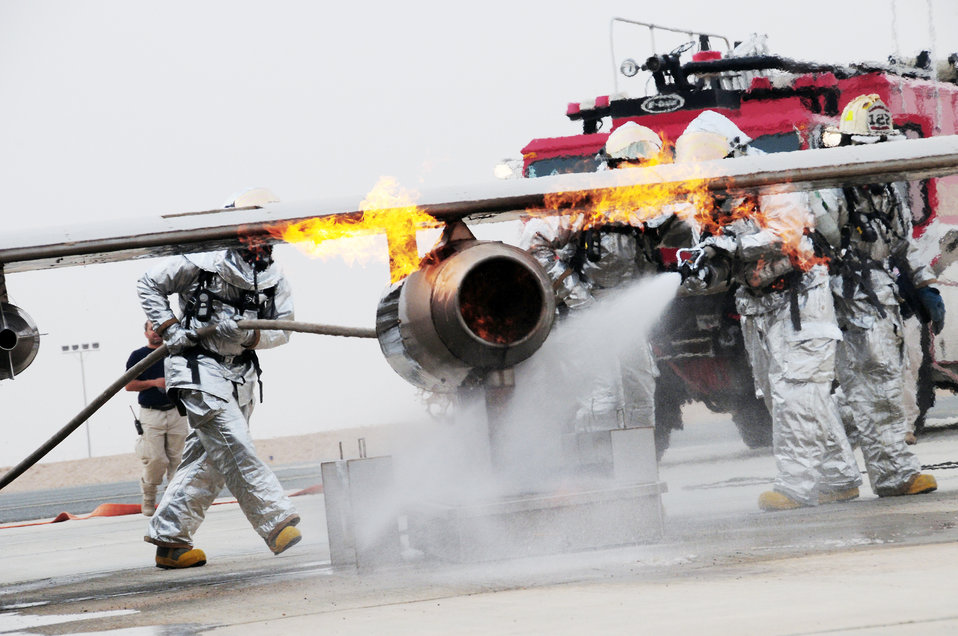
Firefighters test their skills

Firefighters practice extinguishing an aircraft fire April 29, 2010, during fire training at an air base in Southwest Asia.